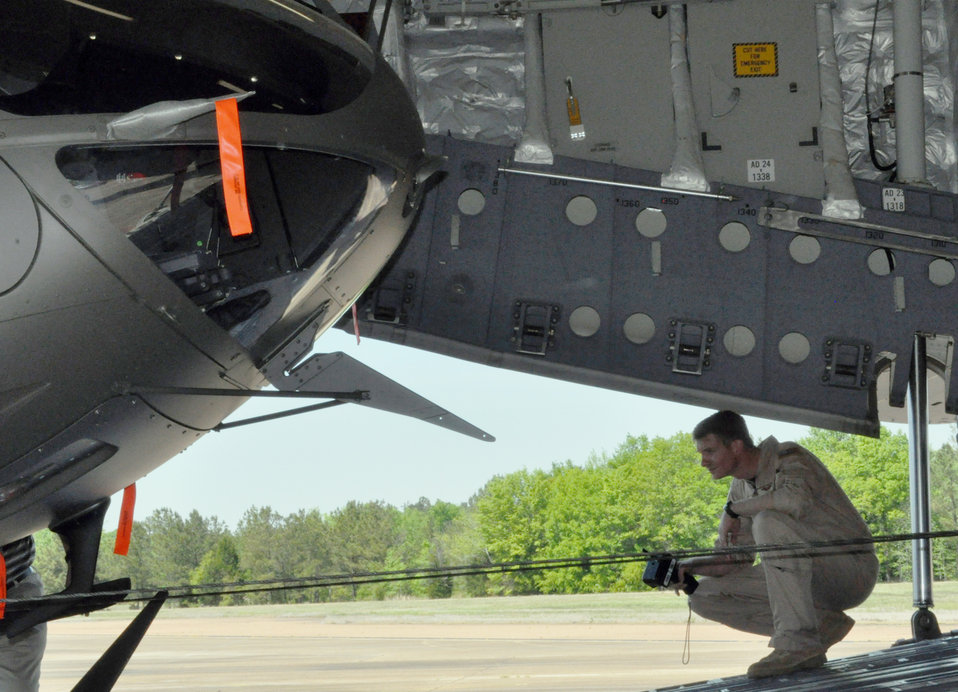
Airmen deliver new Army helicopter to war zone

Tech. Sgt. Charles Boulton operates the winch on a C-17 Globemaster III to pull a UH-72 Lakota into the aircraft April 12, 2010, at Columbus Air Force Base, Miss. Sergeant Boulton is a C-17 loadmaster assigned to the 172nd Airlift Wing.